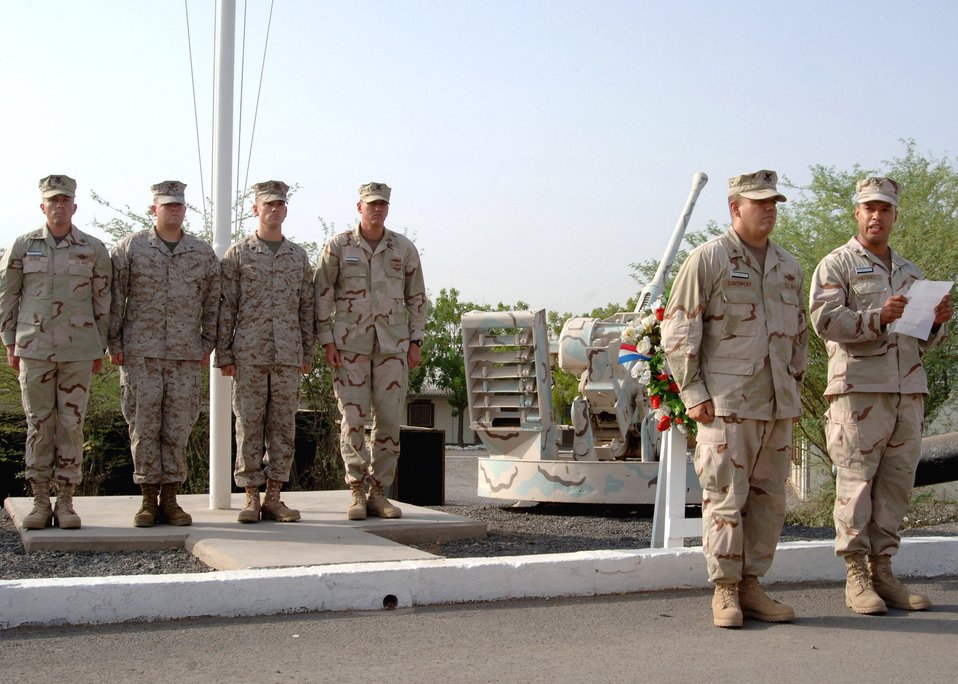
Sept. 11 remembered in Djibouti

Members of the color guard stand at attention as Navy Petty Officer 1st Class Arcenet Vazquez speaks after presenting a wreath in remembrance of the sixth anniversary of Sept. 11. The presentation was one of several events at Camp Lemonier, Djibouti, sponsored by Combined Joint Task Force-Horn of Africa 2008 Navy chief selectees.